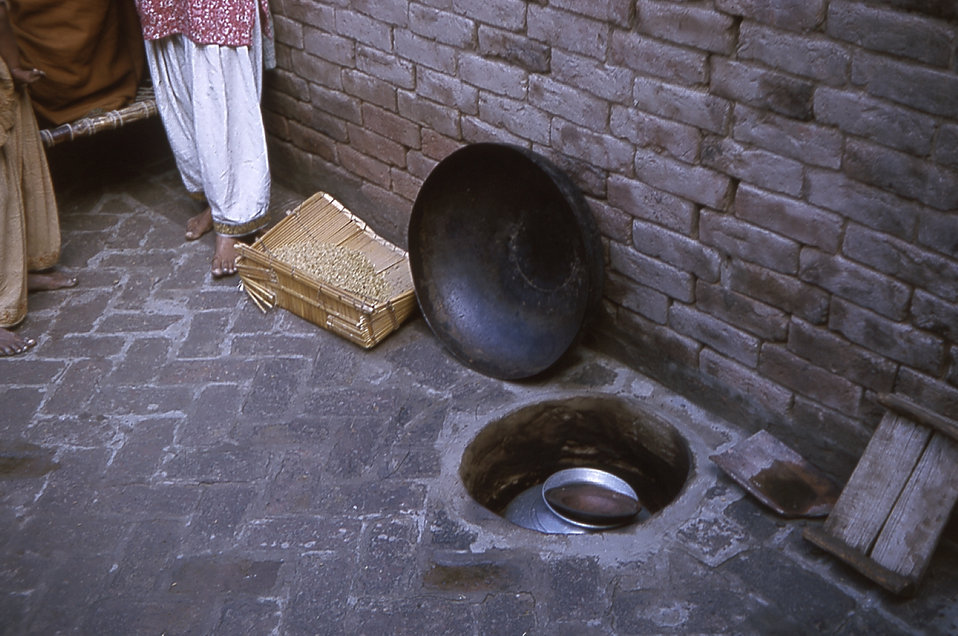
The warming of milk in a below-ground oven is typical of village life in the state of Gujarat, India.